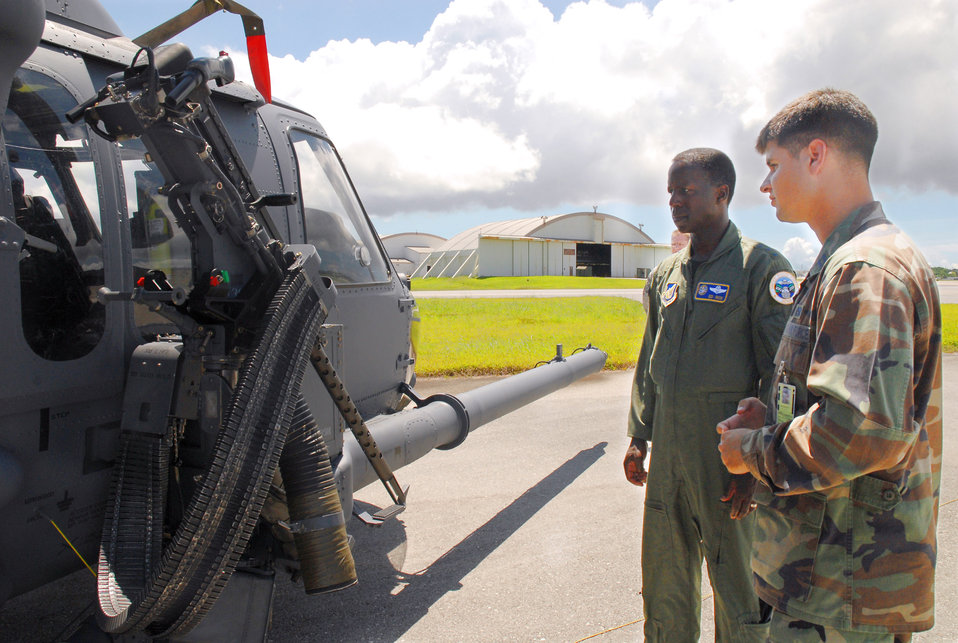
U.S. Forces Japan commander reviews troops

Lt. Gen. Edward A. Rice Jr. discusses the capabilities of the HH-60 Pave Hawk helicopter with Capt. Gerard Carisio during a June 20 tour of Kadena Air Base, Japan. General Rice is the commander of U.S. Forces Japan and 5th Air Force. Captain Carisio is the 33rd Aircraft Maintenance Unit officer in charge.